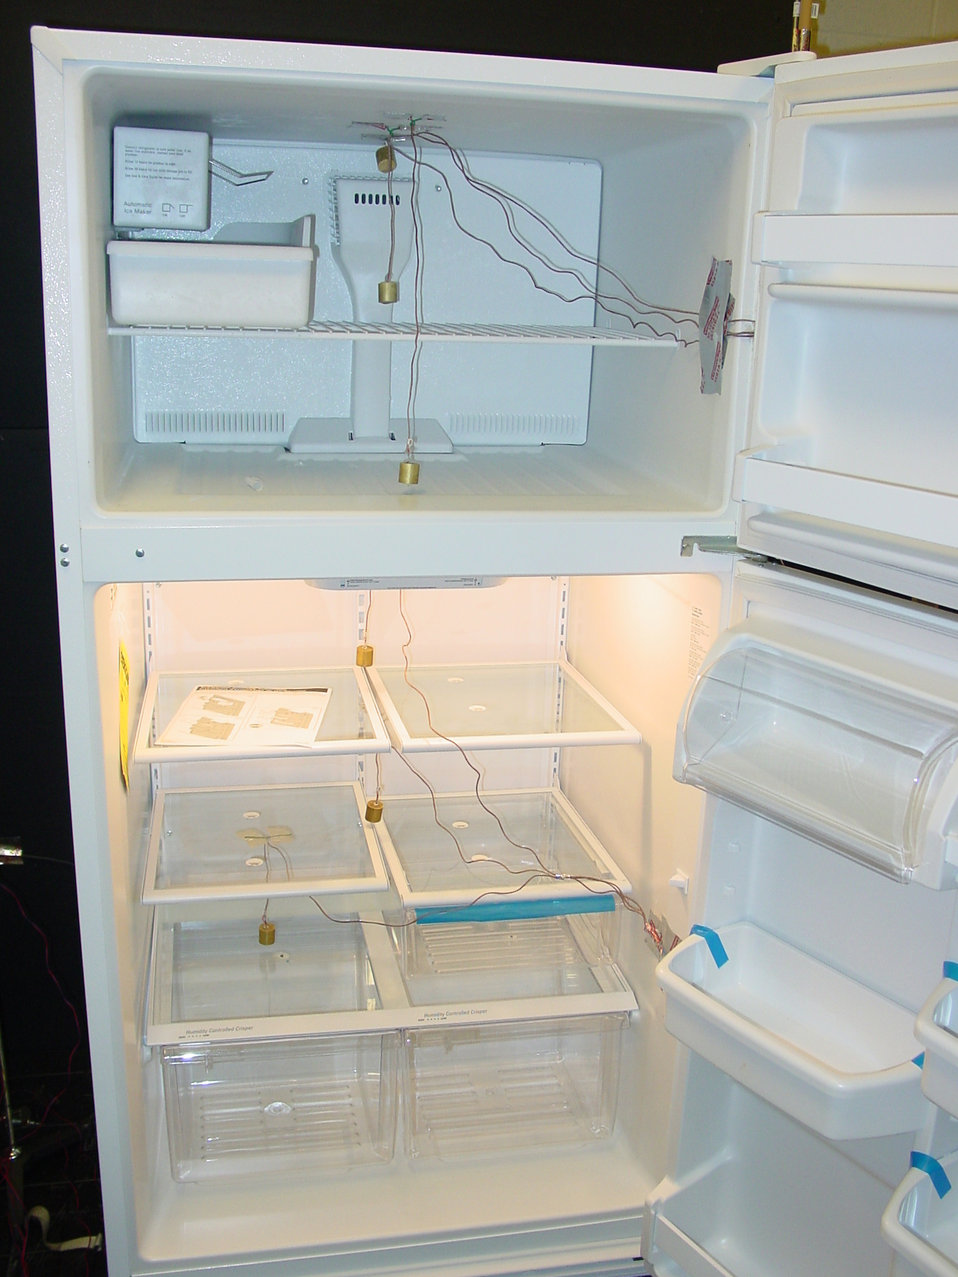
Ice Maker

One of four types tested by NIST researchers, this top-mount refrigerator freezer was outfitted with three thermocouples in each compartment, sampling the temperature every 30 seconds. In all units tested, electric heaters used to free ice from molds accounted for about three-quarters of ice-maker energy consumption.